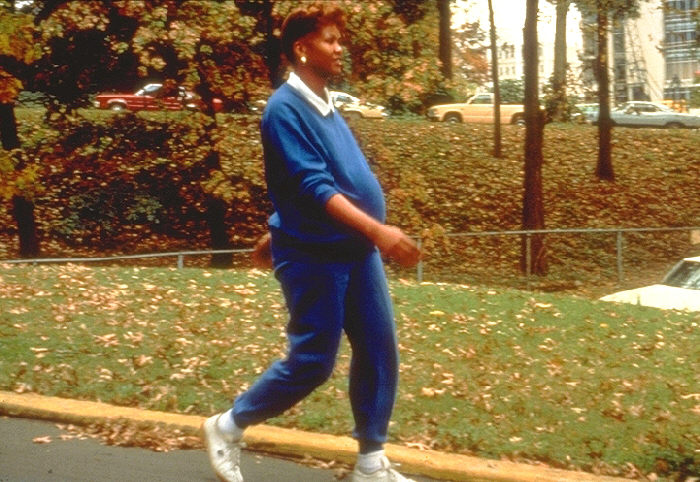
Pregnant woman walking.